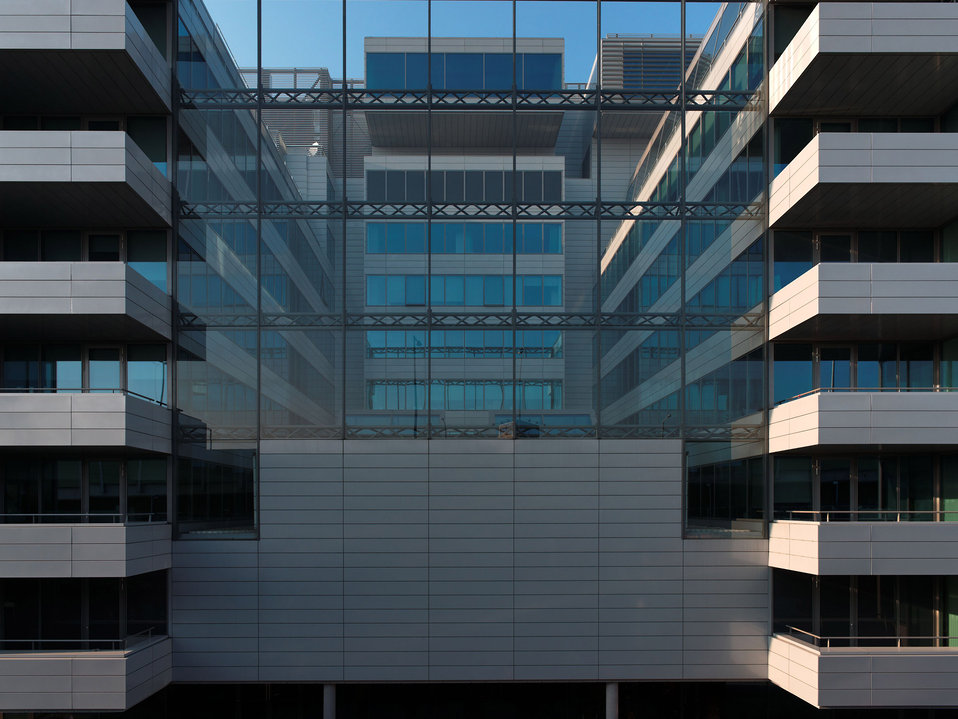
Catamaran house

Ogb house in 1020 vienna.